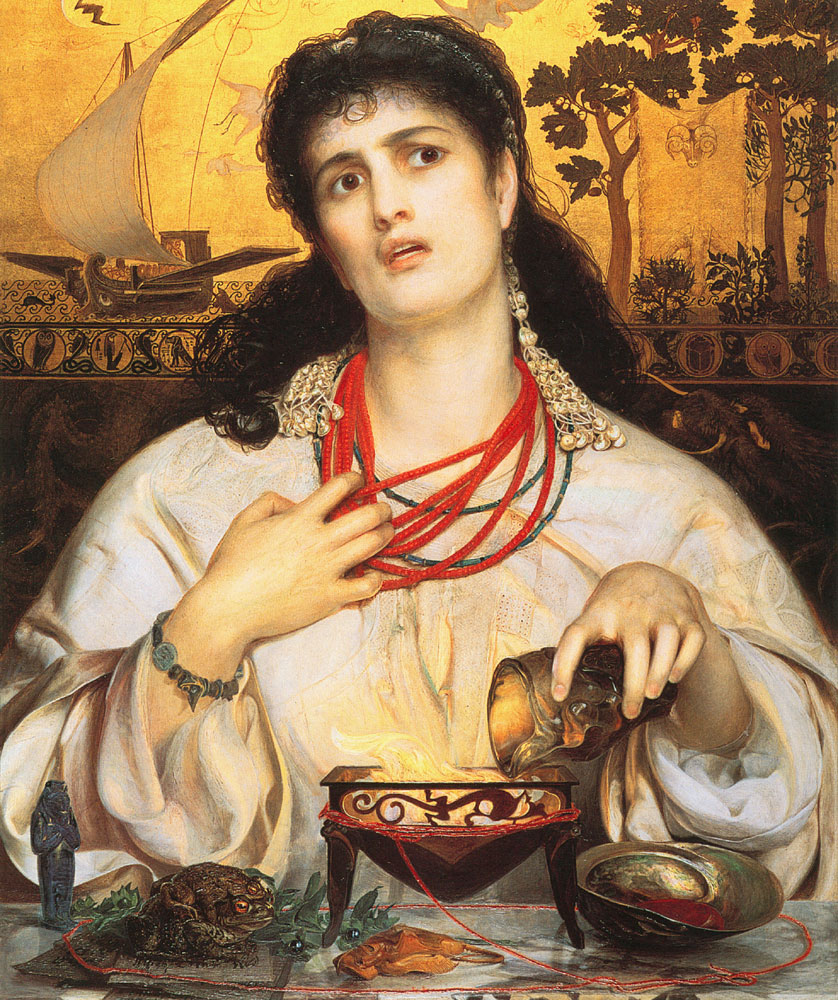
Medea-Sandys